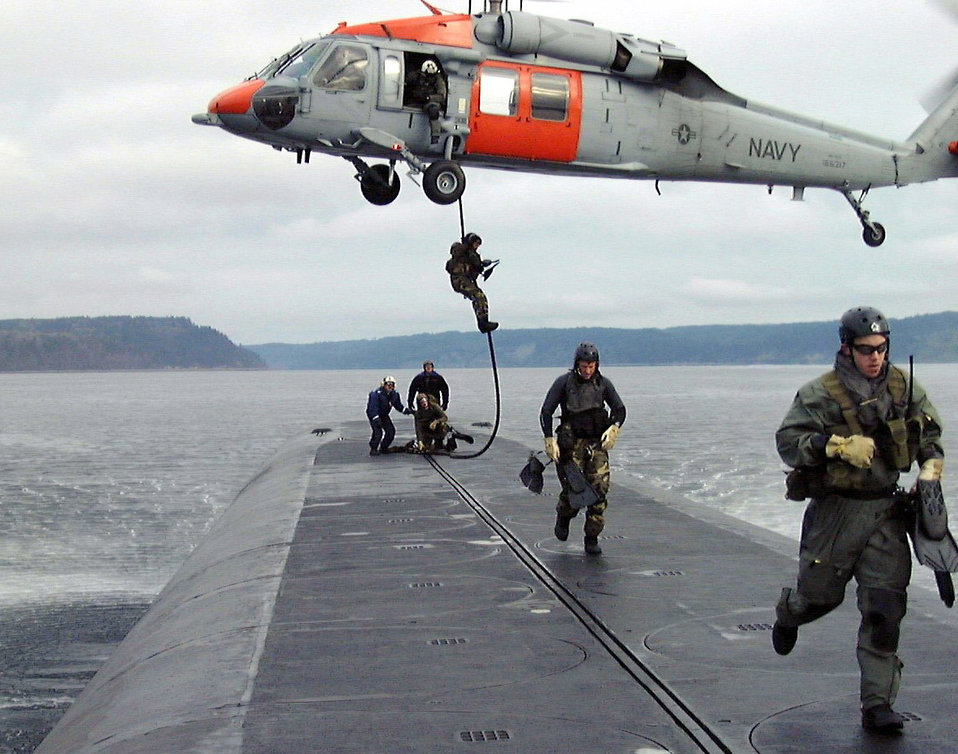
Special Ops Airmen

ONBOARD USS ALABAMA (AFPN) -- Airmen with the 22nd and 23rd Special Tactics squadrons quickly descend from a helicopter rope onto the deck of this submarine in the Pacific Ocean during an exercise. The exercise tested special operations infiltration and rescue tactics.